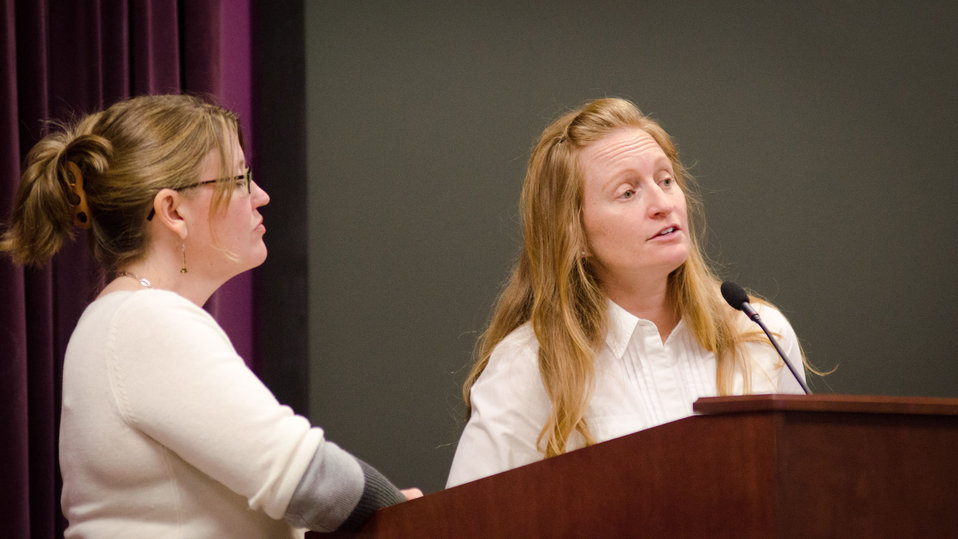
Victory Farms, Inc. owner Gina Cavallo Collins (left) and Monrovia Farms, LLC, Owner Cathy P. Cavender speaking during the Marketing Panel discussion of the “Virginia State University (VSU), U.S. Department of Agriculture (USDA) and Virginia Farmers Working Together” outreach workshop in the VSU, L. Douglas Wilder building on Thursday, March 7, 2013, in Petersburg, VA.